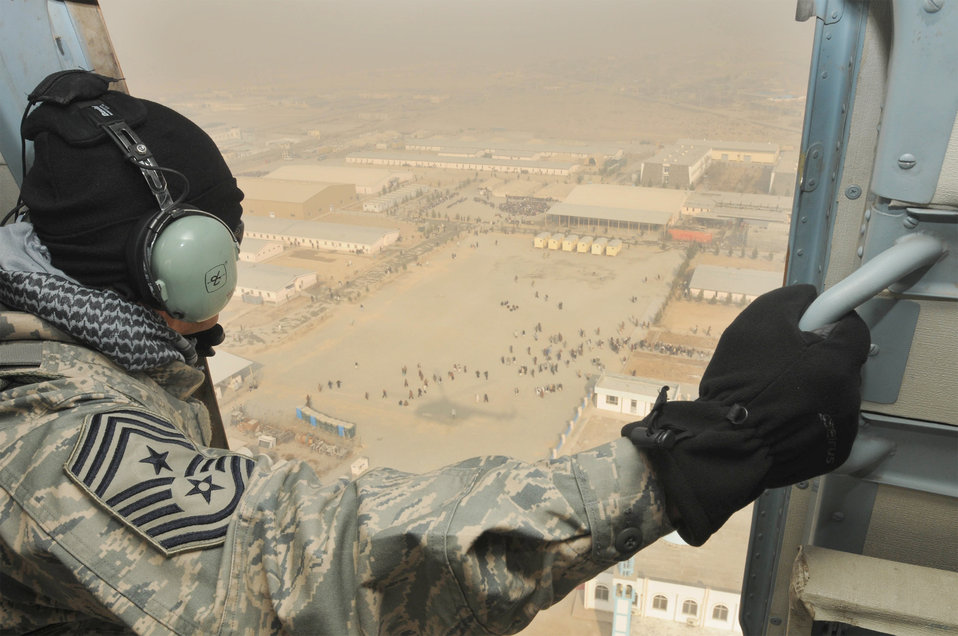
A view from above

Command Chief Master Sgt. Richard Parsons views the Afghan air force base at Kabul from an Mi-17 helicopter during a tour of NATO, Afghan and U.S. installations Jan. 19, 2011. Chief Parsons is the command chief of U.S. Air Forces Central.